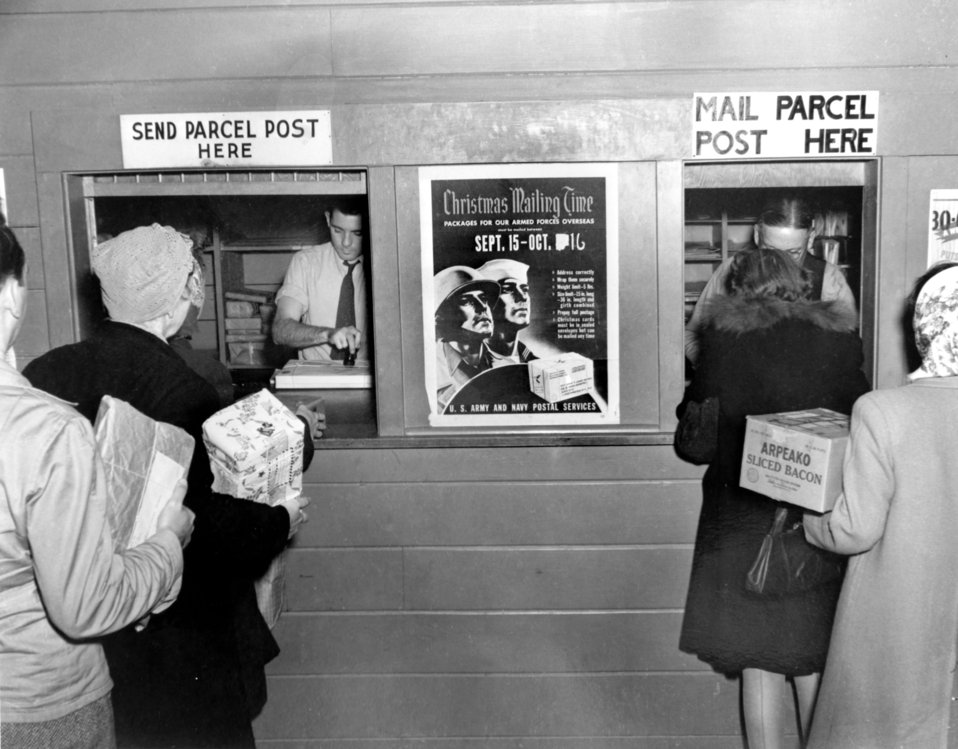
Post Office at Christmas Time Oak Ridge 1944

PRO176-1 DOE photo Ed Westcott 12-8-1944 Oak Ridge Tennessee